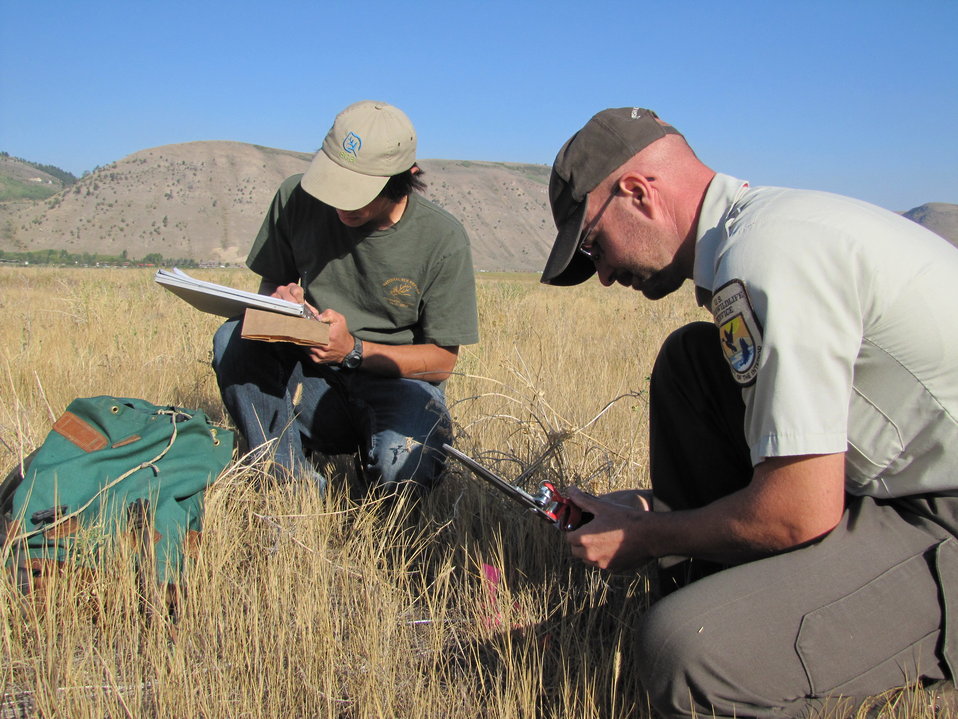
Measuring A Season of Growth

Student Conservation Association (SCA) intern Dominick Harris (left) assists Refuge Biologist Eric Cole (right) in measuring the amount of herbaceous forage produced during the National Elk Refuge's 2012 growing season.